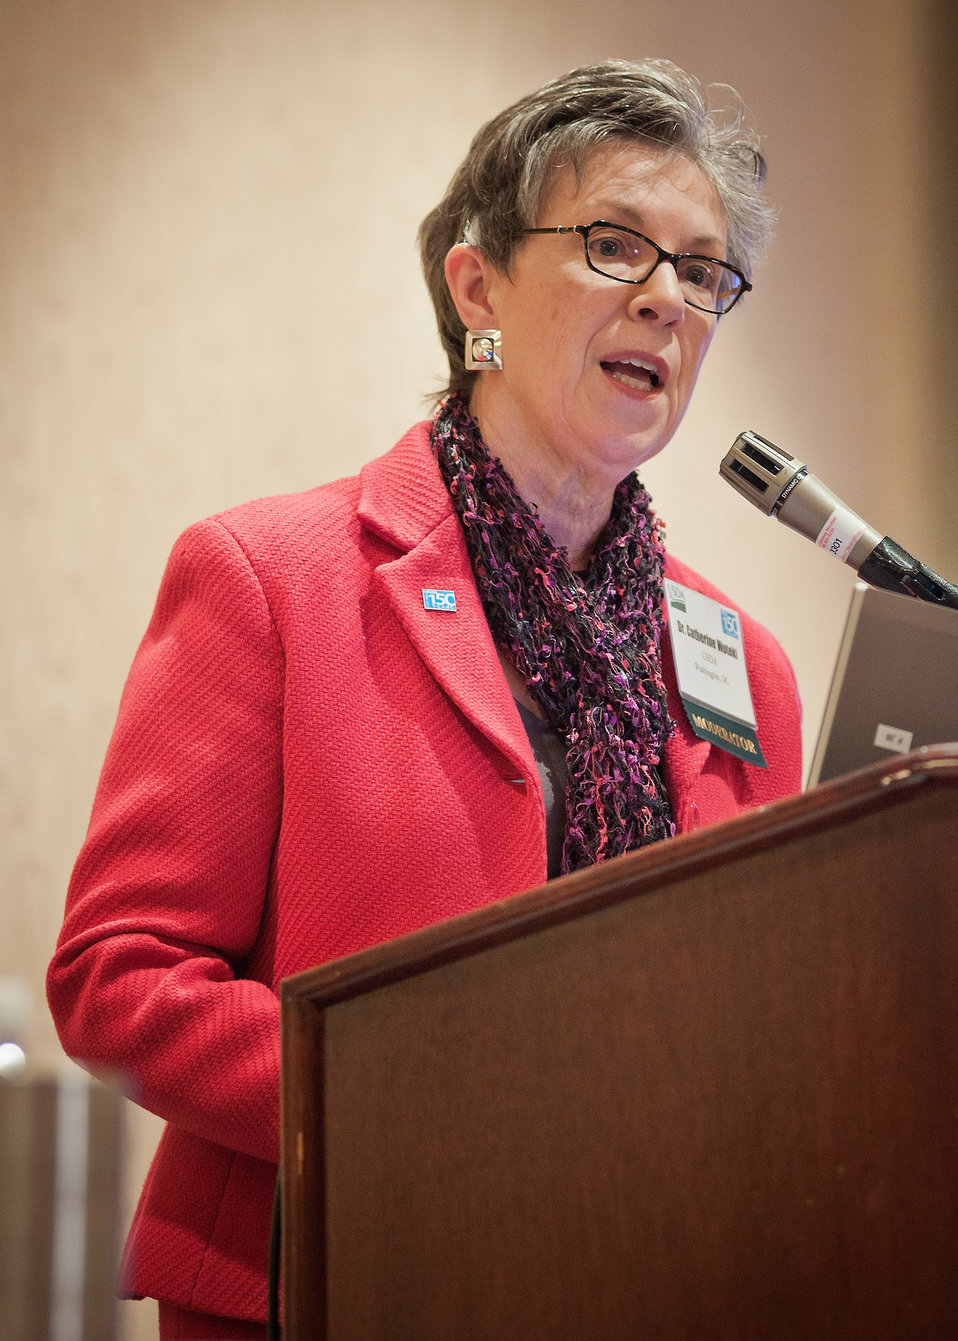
Dr. Catherine Wotecki, Undersecretary, Research, Education and Economics and Chief Scientist moderated the Global Food Security afternoon breakout session at the 2012 Agricultural Outlook Forum, “Moving Agriculture Forward, Growing, Innovating and Celebrating 150 Years” held at the Crystal gateway Marriott Hotel Arlington, Virginia, Friday, February 24, 2012. The session discussed and reviewed challenges associated with feeding a growing world population with a currently strained resource base.